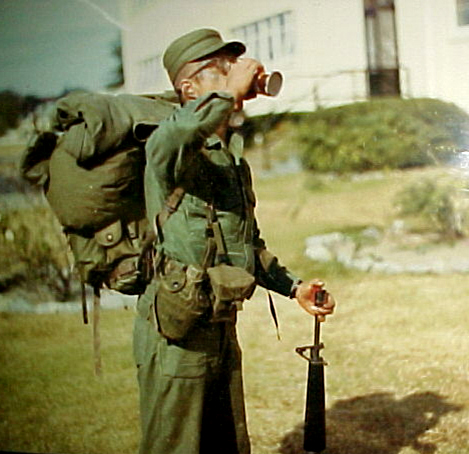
Vernon Cannon, a Program Analyst with the Branch of Equipment and Facilities Management, Division of Information Technology & Management, National Wildlife Refuge System, served in the Army from 1970 to 1990.